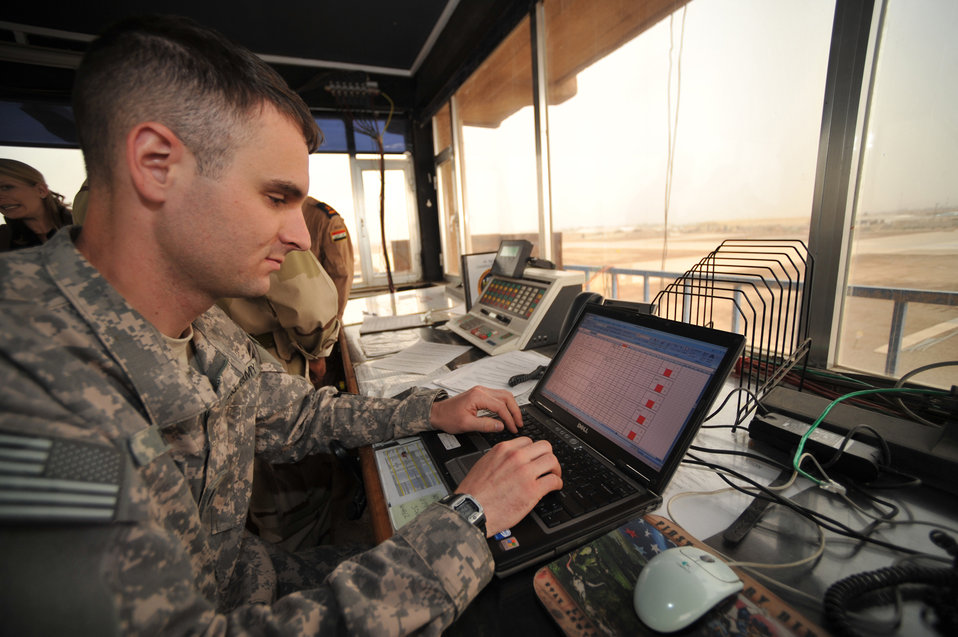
Iraqi airmen closer to controlling Taji tower

U.S. Army Spc. Cyrus Haines types air traffic notes onto a laptop recently at Camp Taji, Iraq. Specialist Haines is assigned to the Combat Aviation Brigade at Fort Riley, Kan.